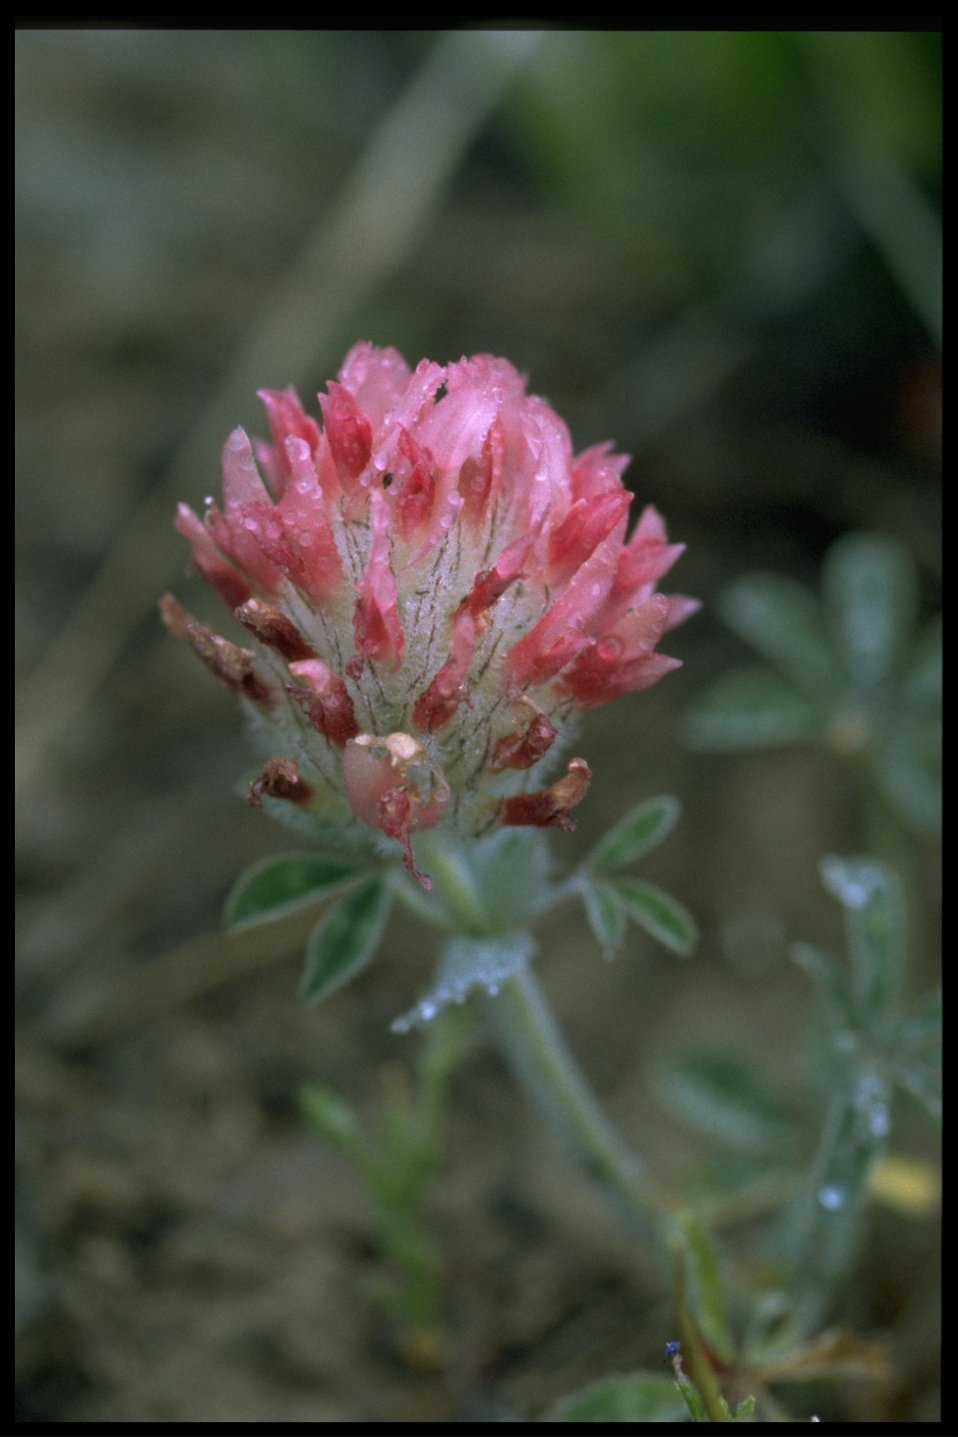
Medium shot of bighead clover (Trifolium macrocephalum).